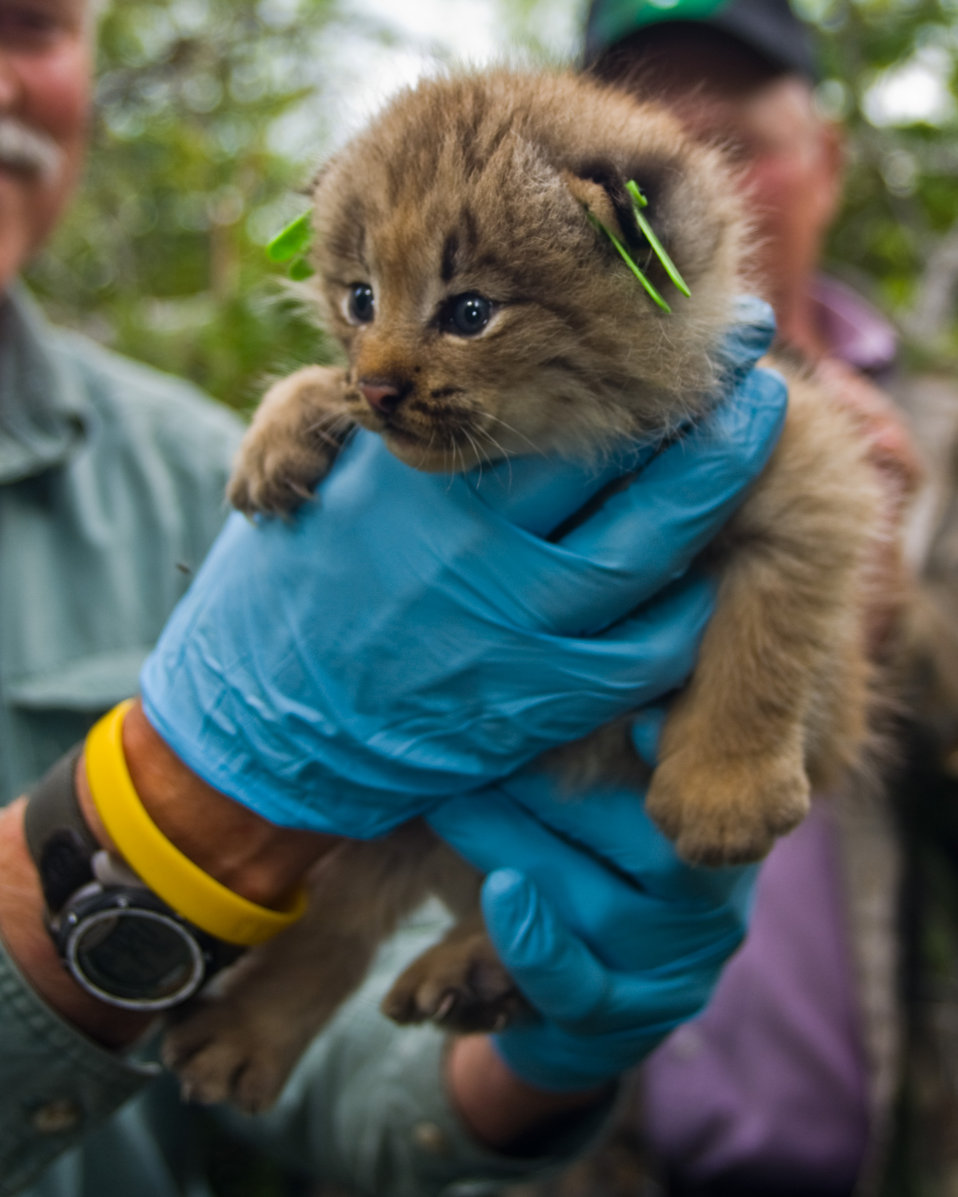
Canada Lynx kitten

A lynx kitten is passed along for the next set of measurements.